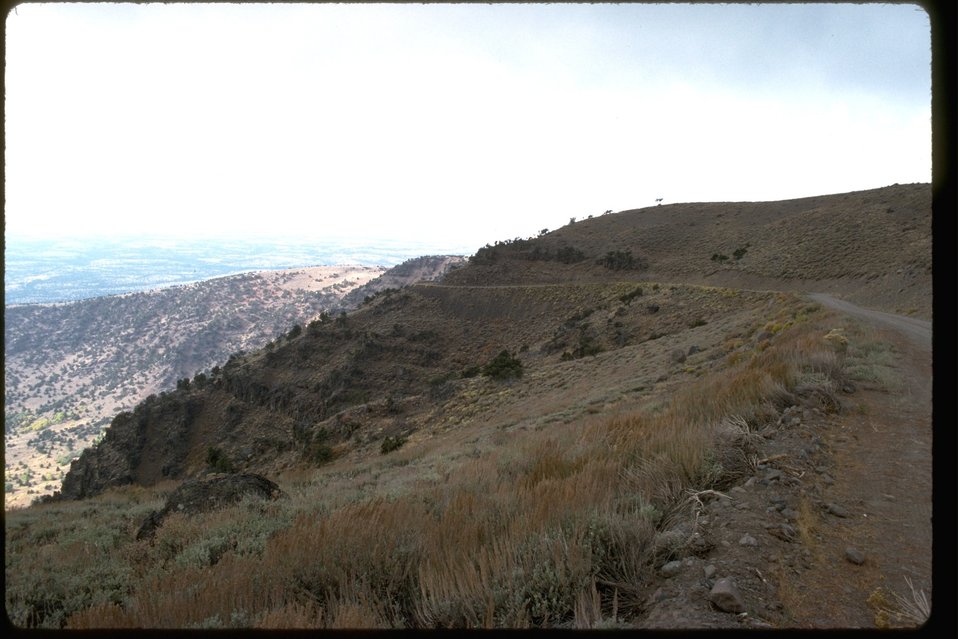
Steens Mountain back country byway, the Rooster Comb stretch, in the Steens Mountain Area of Southeastern Oregon.